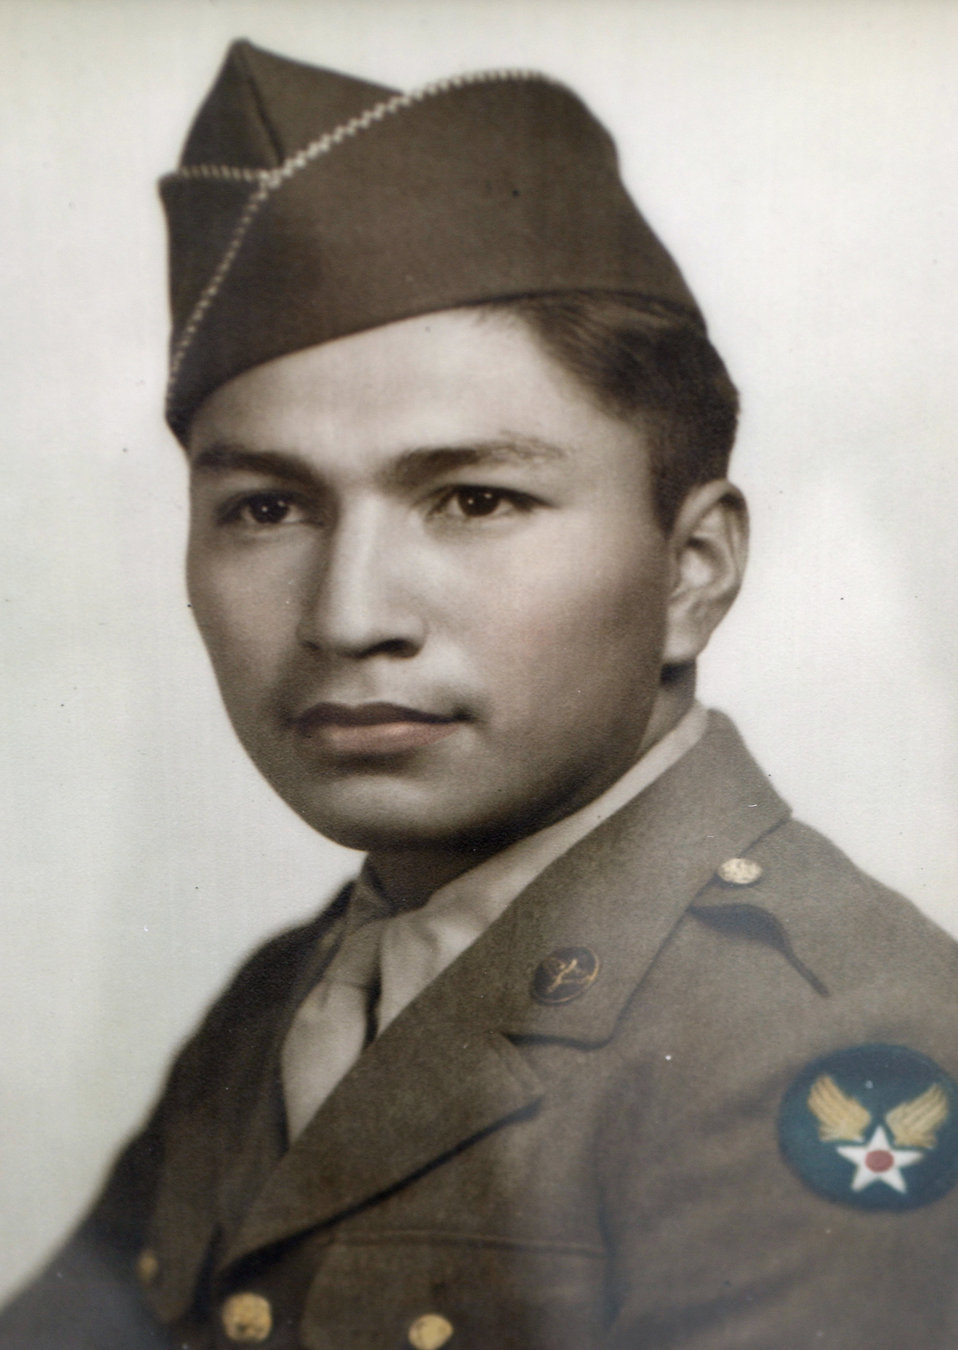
Purple Heart presentation

WASHINGTON -- World War II veteran John Martinez was a staff sergeant in 1945.